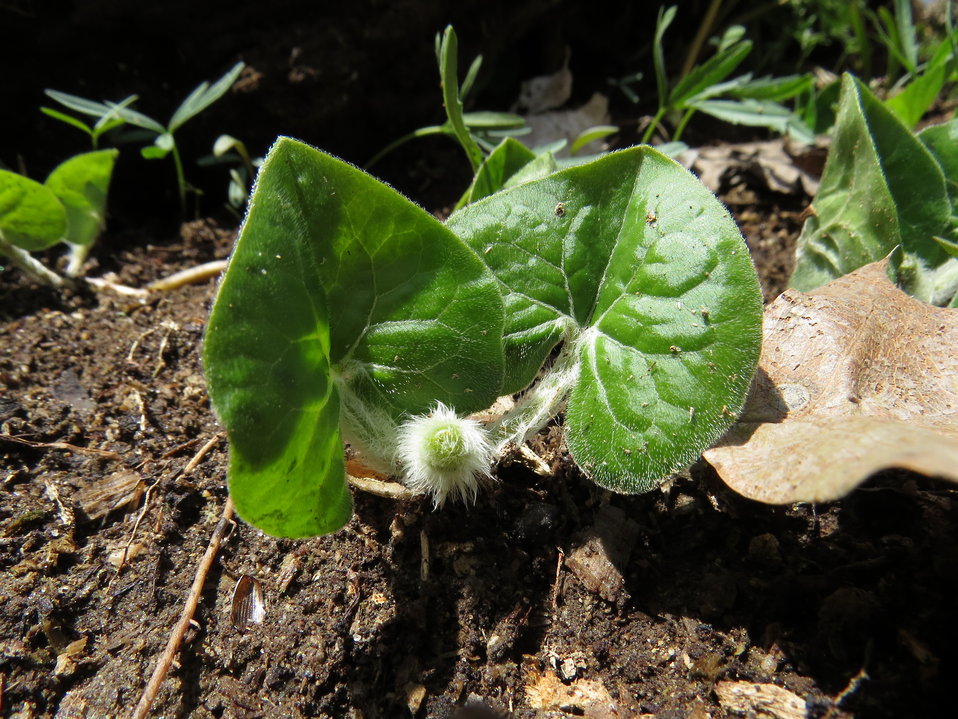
Wild Ginger